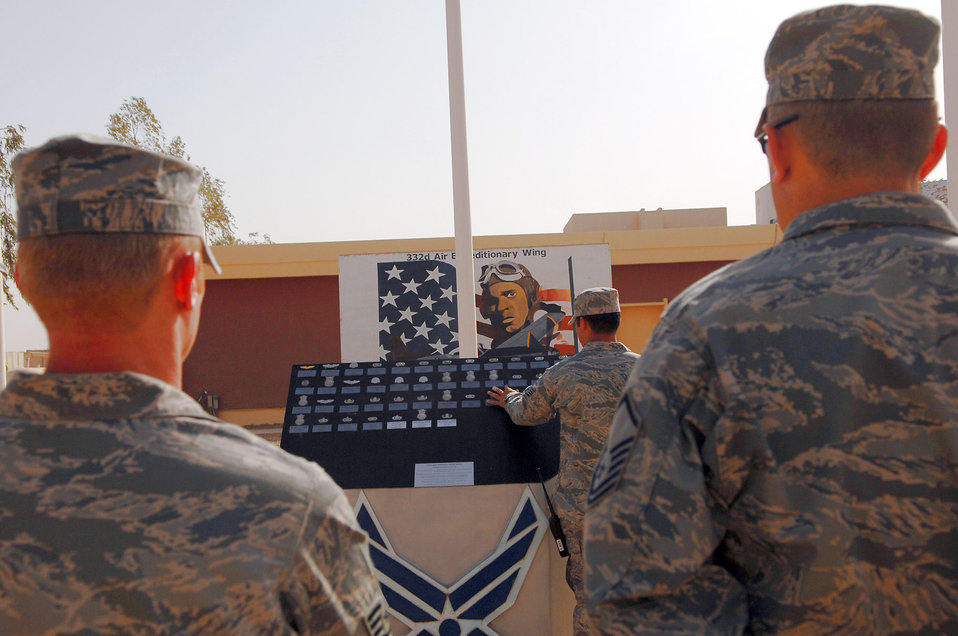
455 AEW holds memorial vigil

Airmen assigned to the 332nd Air Expeditionary Wing at Balad Air Base, Iraq, read the Airman?s Memorial following a Memorial Day observance ceremony May 26. During the ceremony, the names of 44 Airmen assigned to the 332nd AEW who died since 2003 were read. Those names, along with the deceased Airmen?s Air Force specialty code badges, are displayed on the Airman?s Memorial.